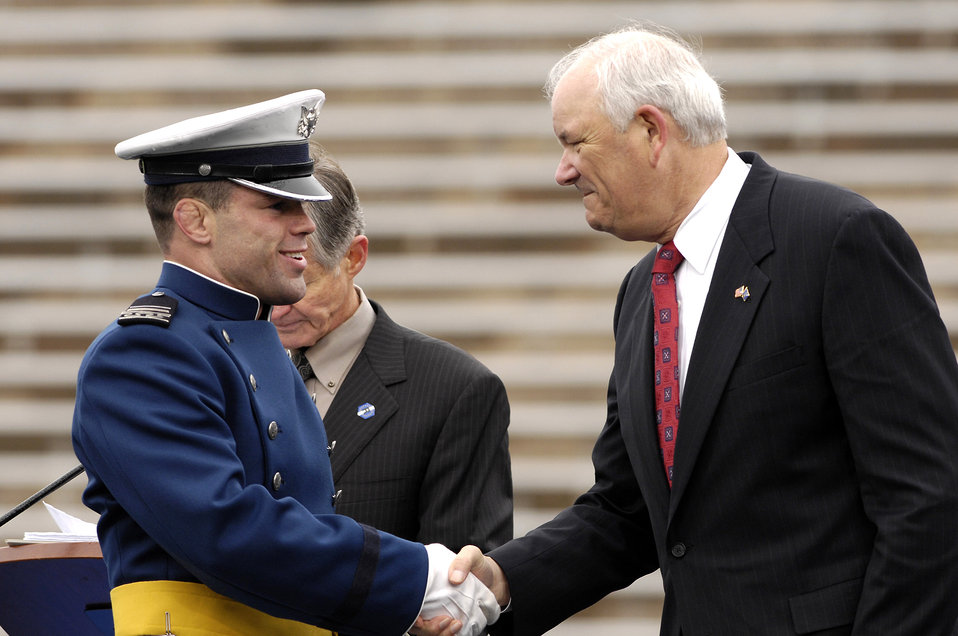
The 50th Academy class graduates

During the U.S. Air Force Academy Class of 2008 graduation ceremony, Secretary of the Air Force Michael W. Wynne congratulates newly commissioned 2nd Lt. Anthony Dorward at Falcon Stadium May 28. The Academy commissioned 1,012 second lieutenants.